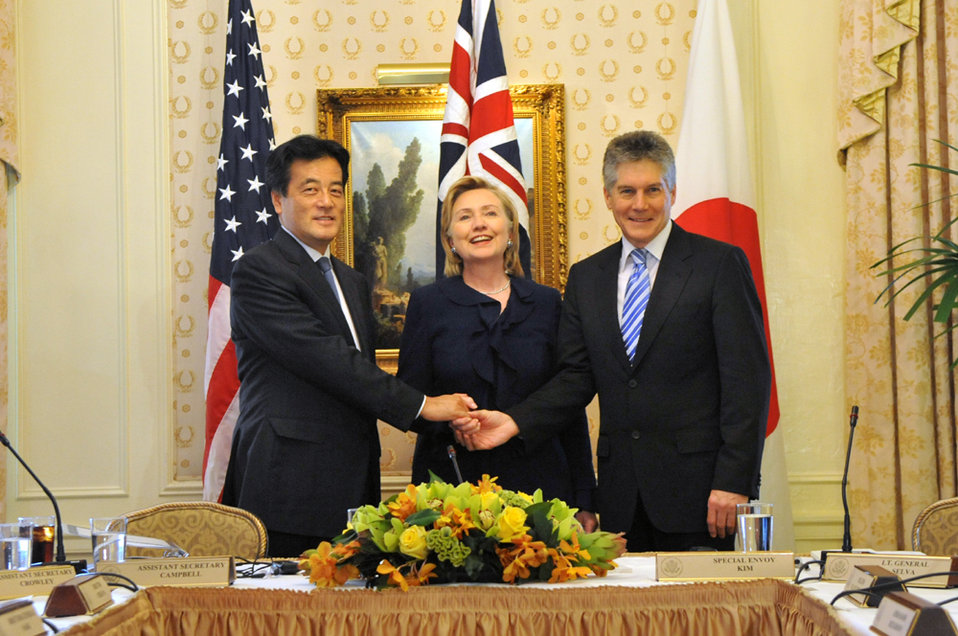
UNGA 2009: State Hillary Rodham Clinton Participates in a Trilateral Strategic Dialogue With Australia and Japan

U.S. Secretary of State Hillary Rodham Clinton participates in a Trilateral Strategic Dialogue with Australia and Japan at the Waldorf Astoria hotel during the 64th Session of the UN General Assembly in New York City, New York September 22, 2009.